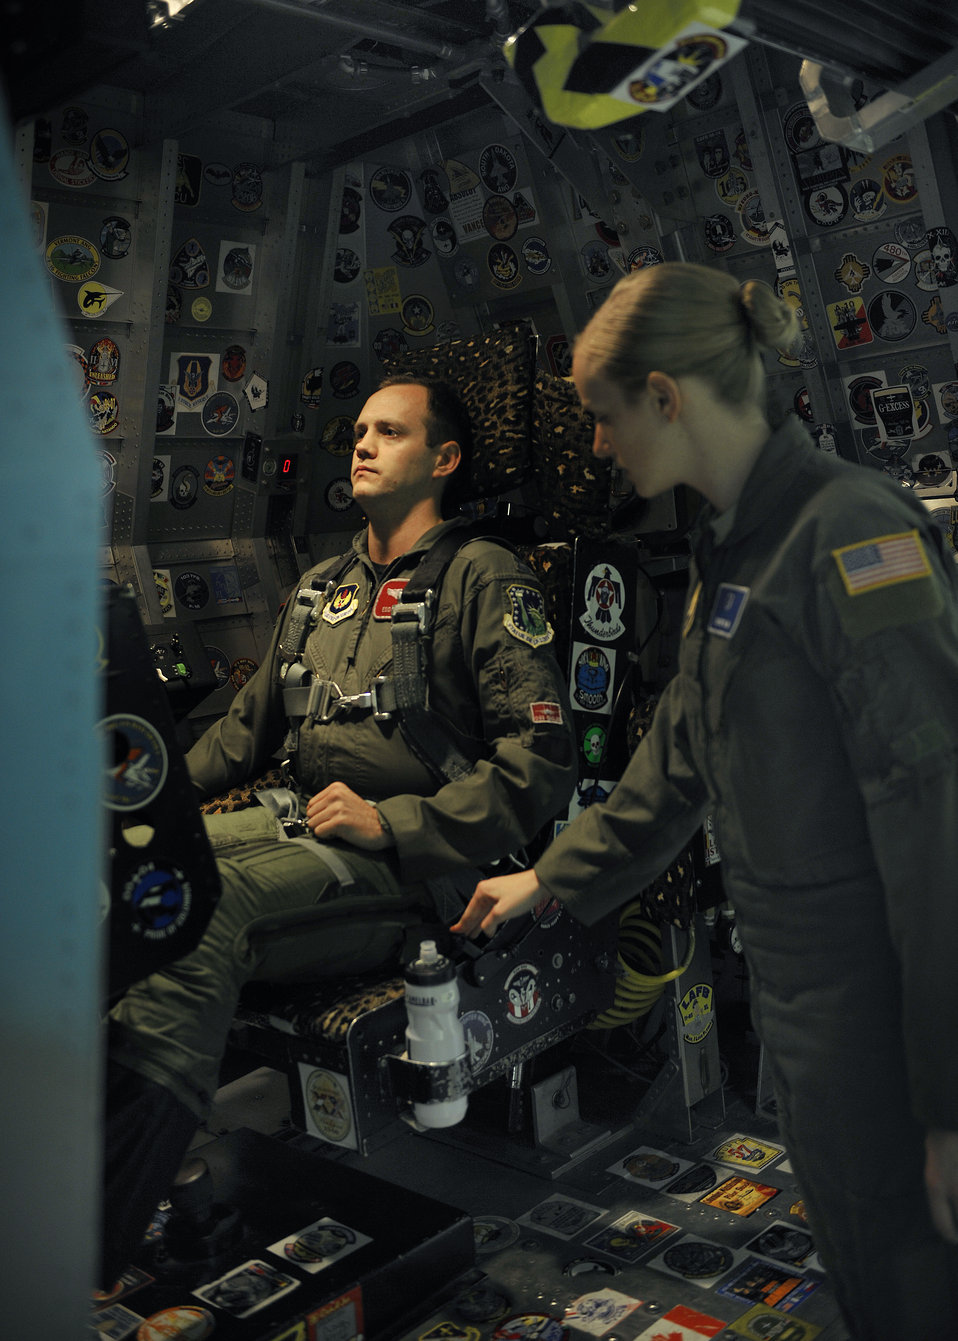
Centrifuge takes last spin

Capt. George Cannon prepares to spin in the centrifuge during flight acceleration training Oct. 27, 2010, at Holloman Air Force Base, N.M. Captain Cannon was the last student to spin in Holloman AFB's centrifuge, which is being deactivated as directed by the Department of Defense Base Realignment and Closure of 2005. The BRAC announced the consolidation of the fighter acceleration training and aerospace medicine research missions at Wright-Patterson AFB, Ohio, where a new centrifuge is being built. Captain Cannon is the 48th Operations Support Squadron Tactics Division chief from Royal Air Force Lakenheath, England.